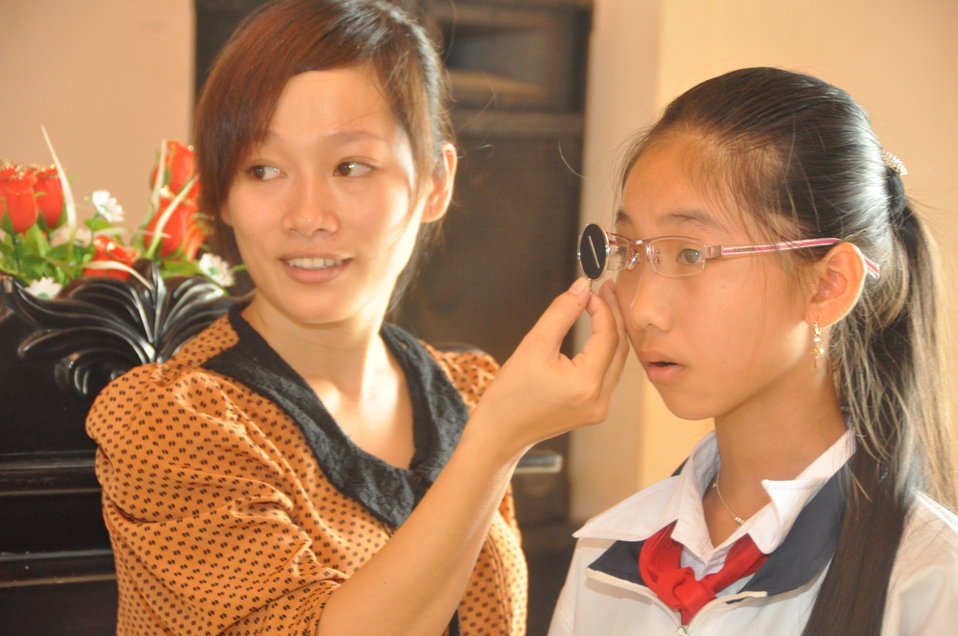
School children in Dak To, Kon Tum Province, receive eyeglasses under a program supported by USAID and partners HKI and World Learning